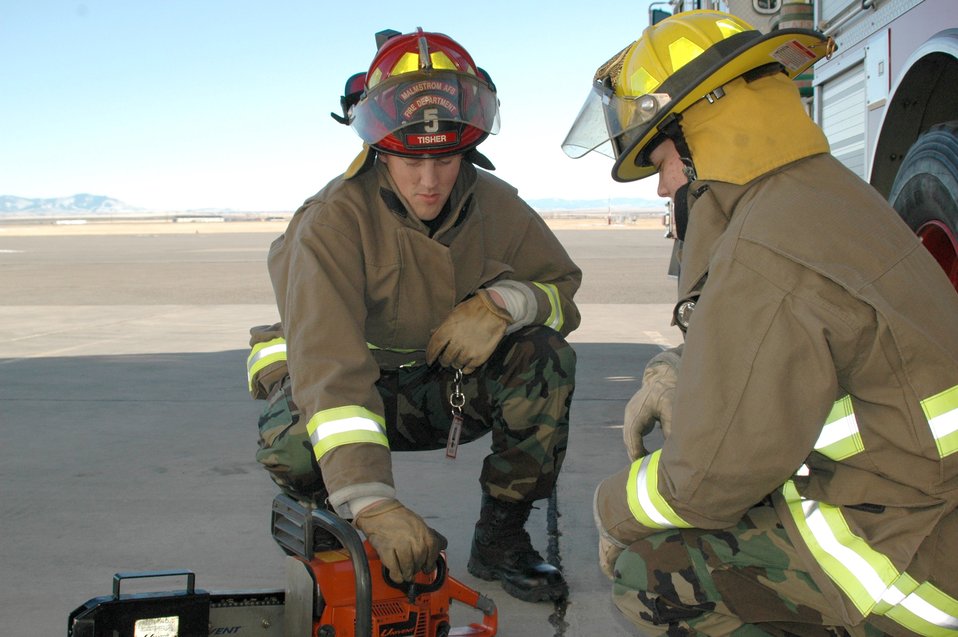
Serving through the season: Staff Sgt. Adam Tisher

Staff Sgt. Adam Tisher, a fire fighter crew chief with the 341st Civil Engineer Squadron at Malmstrom Air Force Base, Mont., shows Airman 1st Class Christina Fowler how to use a chainsaw during training.